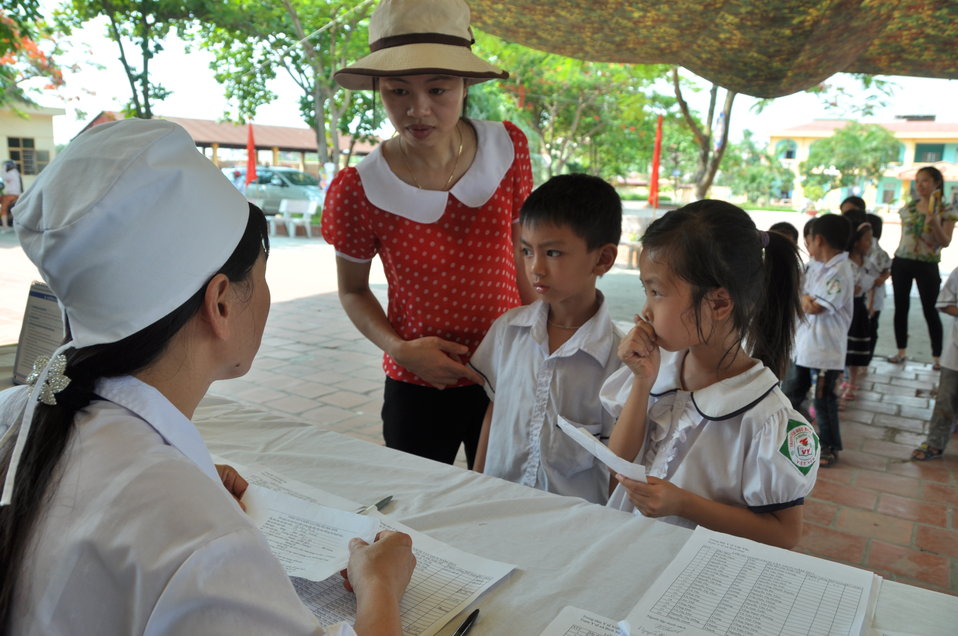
USAID supports deworming education and medication distribution in Bac Giang Province

May 20, 2013